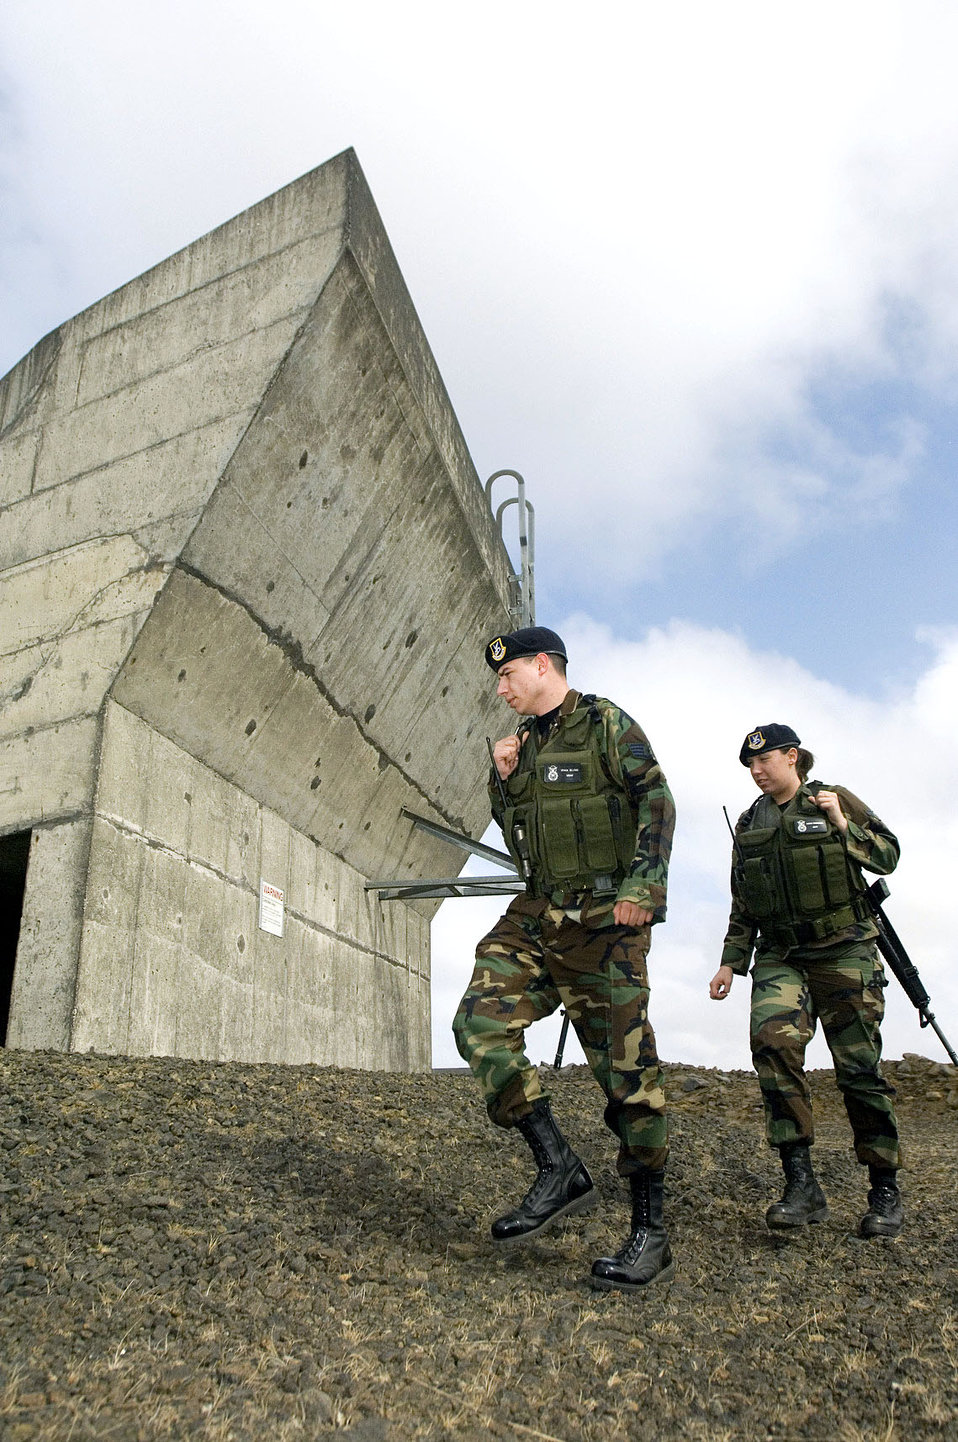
Drawdown at Keflavik

Staff Sgt. Ryan Blume and Airman 1st Class Alisha Torgerson check a protected aircraft shelter at Naval Air Station Keflavik, Iceland, on Monday, May 22, 2006. Airmen and Sailors are reducing operations after more than 50 years of U.S. presence at the base. Sergeant Blume, from Nealsville, Wis., and Airman Torgerson, from Oxnard, Calif., are security force Airmen with Keflavik's 85th Security Forces Squadron.